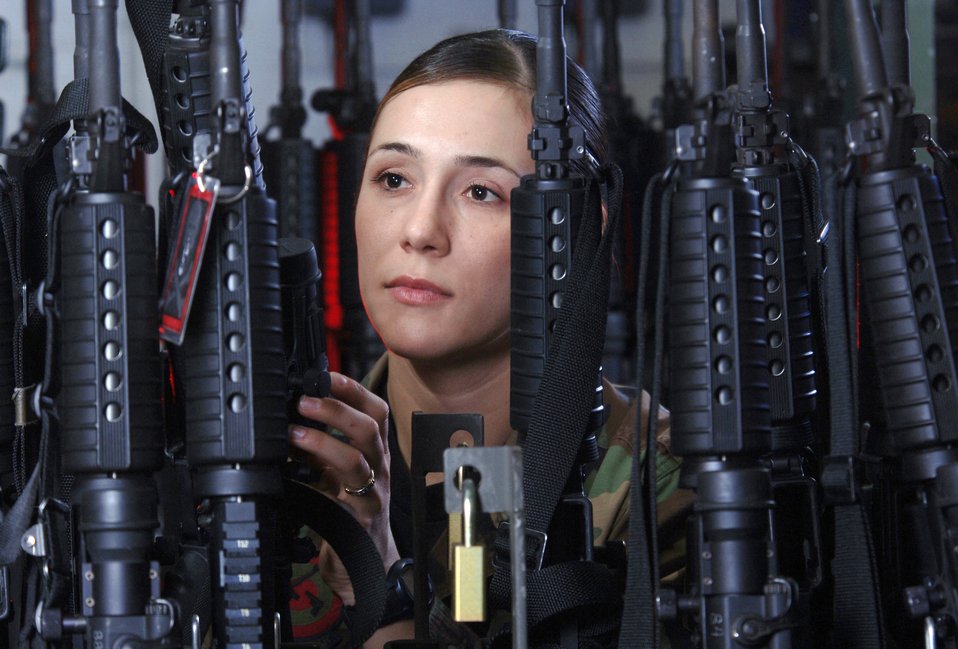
Weapons inspection

YOKOTA AIR BASE, Japan -- Staff Sgt. Pamela Morton inspects M-4 carbine rifles at the armory here. Sergeant Morton is with the 374th Security Forces Squadron.